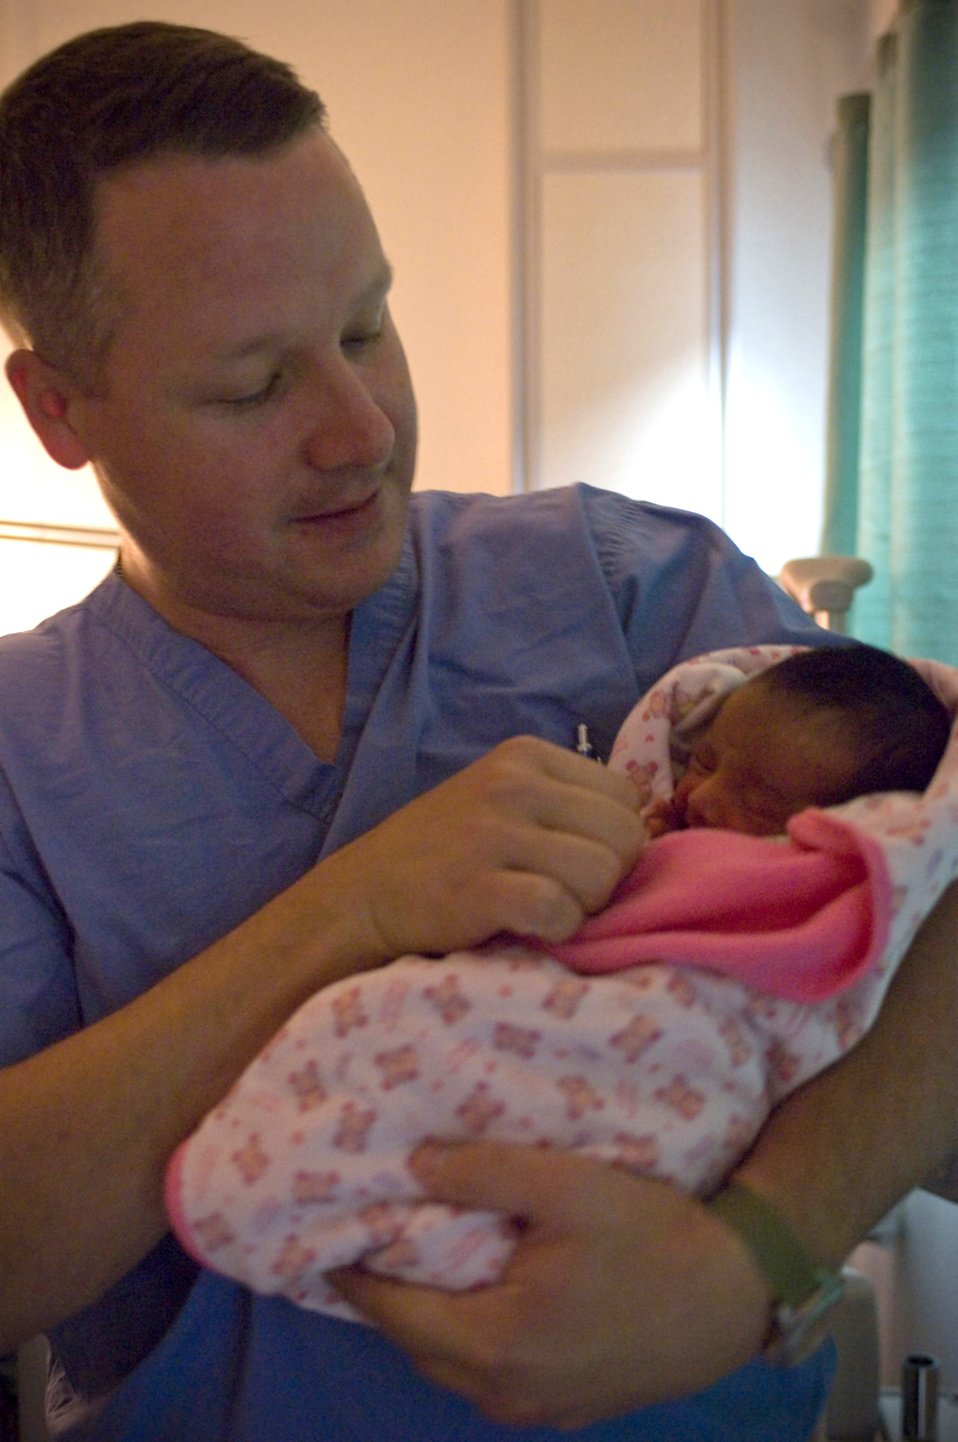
First Afghan baby born at Bagram Air Field

Capt. (Dr.) Brian Hearn checks on Zahra, the first Afghan baby born in the Craig Joint Theater Hospital at Bagram Airfield, Afghanistan, Oct. 8. Although he is deployed to work as a general physician and surgeon, Doctor Hearn, like many of the hospital staff members, is using his home-station experience to help care for the newborn. Doctor Hearn is an obstetrics/gynecology physician.